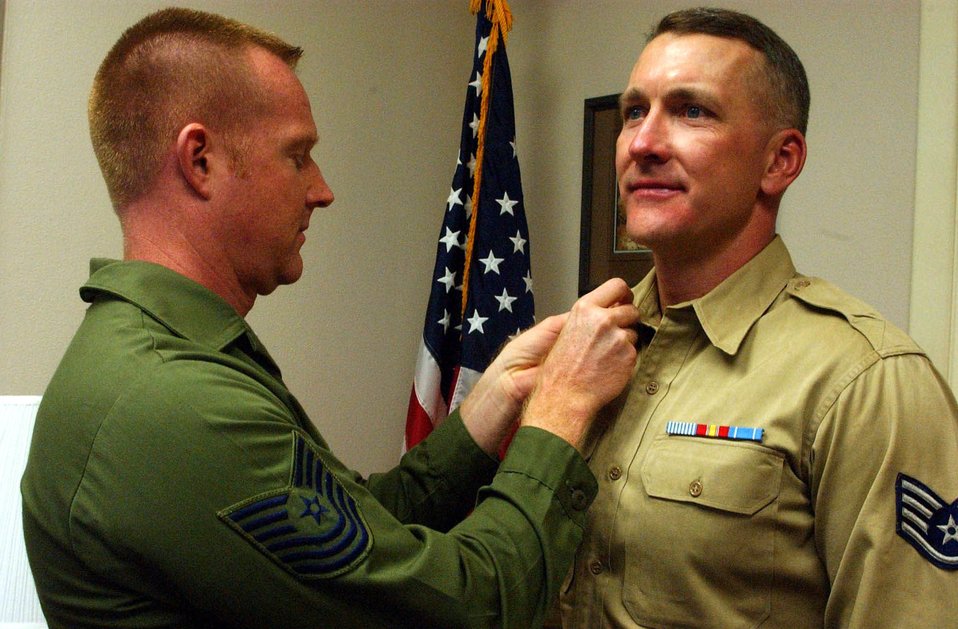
Living legends celebrate Air Force heritage Living legends celebrate Air Force heritage

F.E. WARREN AIR FORCE BASE, Wyo. -- Tech. Sgt. Shawn Davis (left) puts the finishing touches on the vintage uniform of Chief Master Sgt. Mark Brejcha. Sergeant Davis is wearing fatigues from the 1970s, and Chief Brejcha is wearing a Korean War-era 505 khaki shirt, worn by his father in 1954. The sergeants are members of Living Legends, an organization dedicated to preserving and increasing awareness of the Air Force's heritage. Airmen wear vintage uniforms at Air Force special events and share the history of the person who donated the uniform. Sergeant Davis is the noncommissioned officer in charge of the 90th Mission Support Squadron's personnel relocation, and Chief Brejcha is the 90th Mission Support Group superintendent.